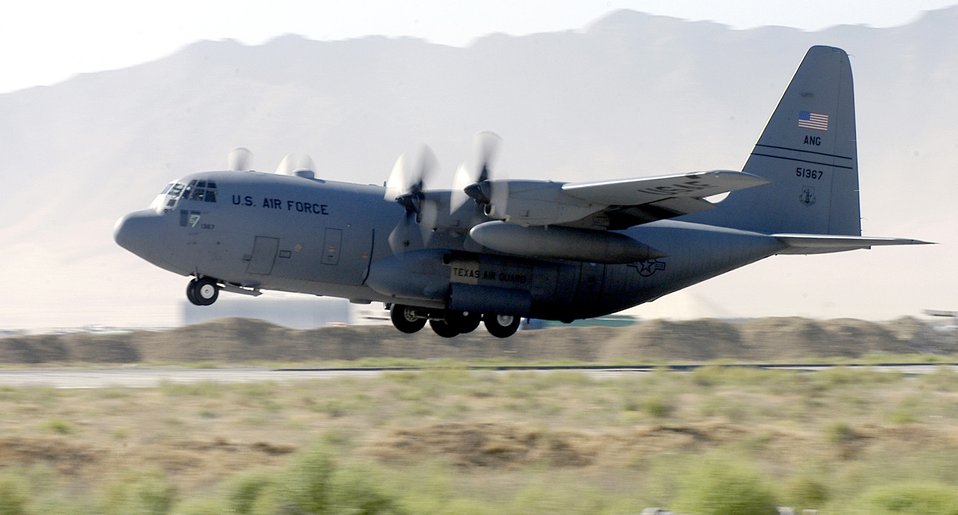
Hecules lifts off

A C-130 Hercules from the Texas Air National Guard takes off from Bagram Air Base, Afghanistan, on Wednesday, June 14. The 744th Expeditionary Airlift Squadron comprises Air National Guard units throughout the United States. They fly airlift and airdrop missions from Bagram in support of Operation Enduring Freedom.